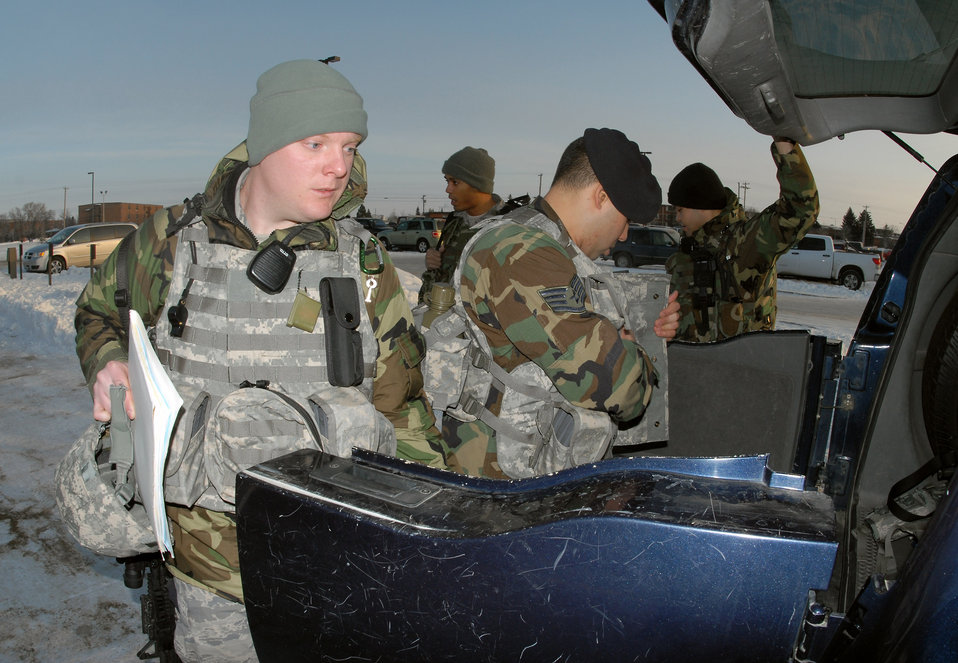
ANG forces deploy for missile security

Airman 1st Class Erik Foss (left) and Staff Sgt. John Chalupa, security forces Air National Guardsmen from the North Dakota Air National Guard's 219th Security Forces Squadron in Minot, N.D., load their gear into a vehicle Dec. 18 as they prepare to dispatch into the missile fields near Minot Air Force Base. Sergeant Chalupa and Airman Foss are the first ANG members to work the missile security mission with active-duty security forces Airmen.